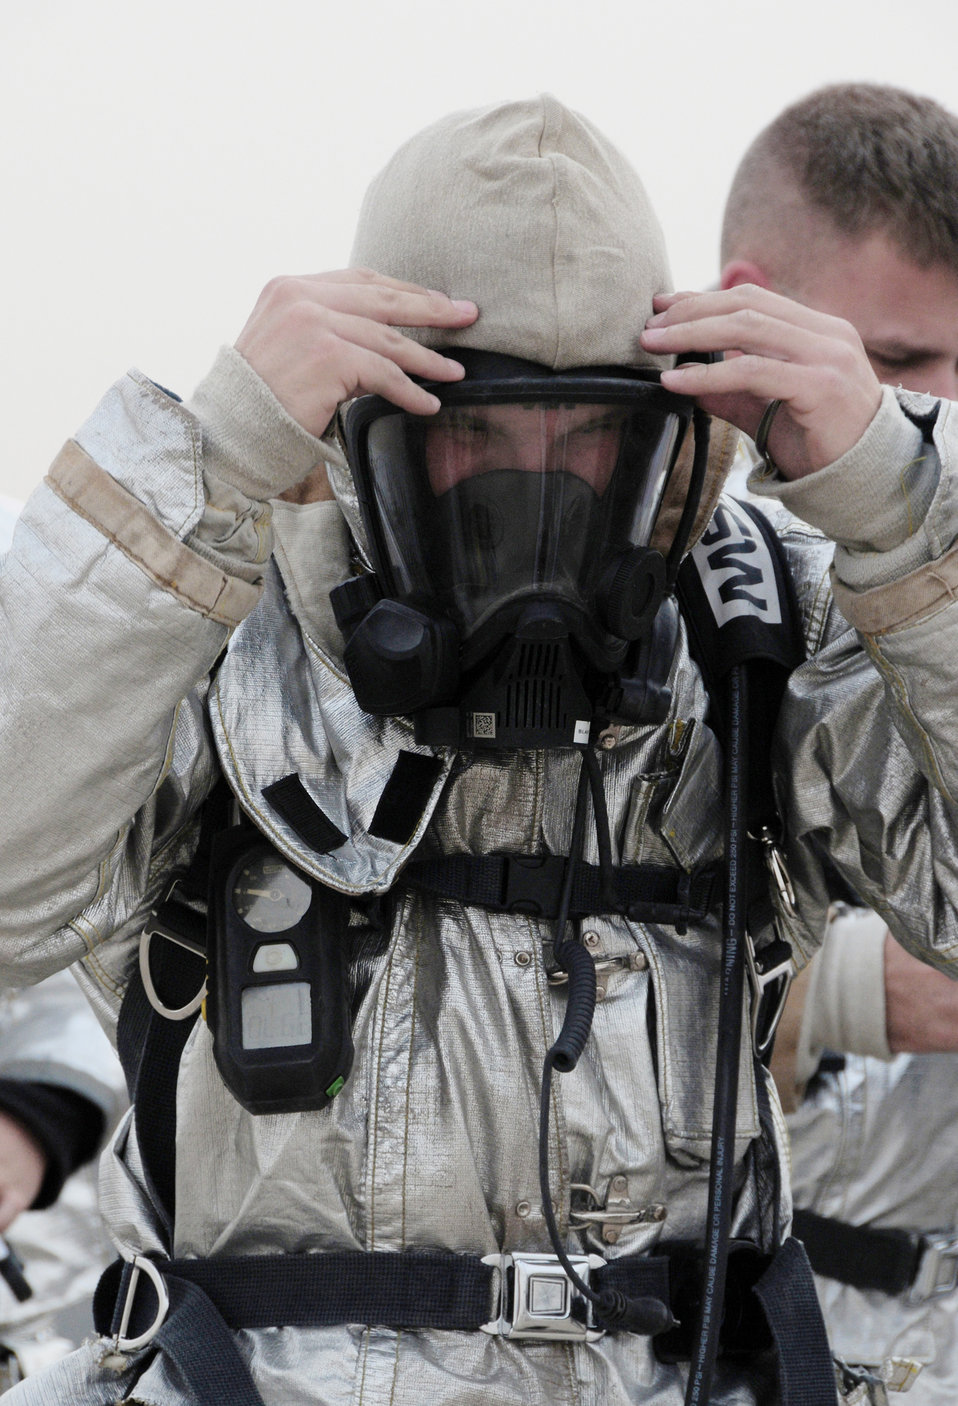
Firefighters test their skills

Master Sgt. Jake Blair tightens the straps on his oxygen mask April 29, 2010, in preparation for fire training at an nearby base in Southwest Asia. Sergeant Blair is the assistant chief of operations with the 386th Expeditionary Civil Engineer Squadron fire department.